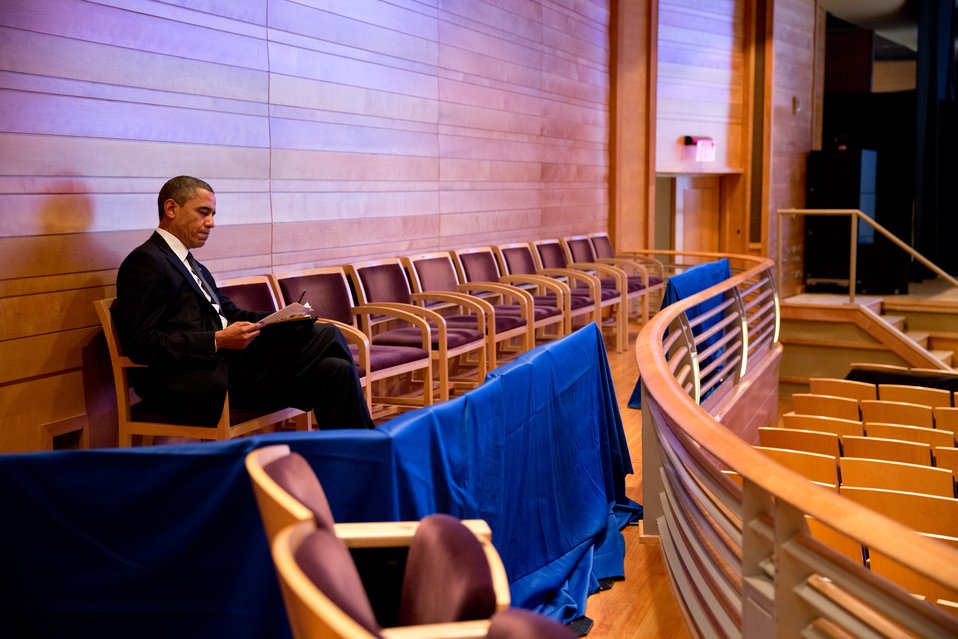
Dec. 16, 2012
'The President works on his Newtown speech at an auditorium in suburban Washington. Two days earlier, I had photographed him when John Brennan first briefed him on the shootings. Throughout that day, he reacted as we all did, which people witnessed when he delivered his statement a few hours later. Before we headed to Newtown for the Sunday night vigil, he went to watch his daughter Sasha, 11, at her rehearsal for the Nutcracker; he would be unable to attend her performance because of the trip to Newtown. During breaks in the rehearsal, he worked on his speech. His expression in this photograph may be subtle to the viewer, but not to me. There is emotion and resolve etched on his face, and he knew the importance of this speech for the nation.'